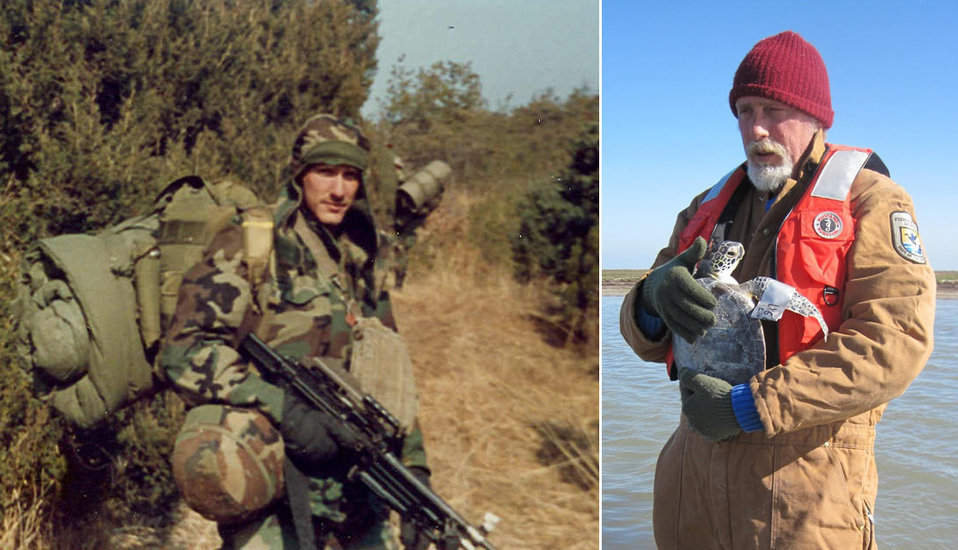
Craig Giggleman-Northeast Region

Craig Giggleman first enlisted in the U.S. Army in 1986. He had just graduated from college and wanted to take advantage of the GI Bill program, knowing that he would eventually return to complete a graduate degree program. Giggleman was no stranger to military life having been raised in a family with a long history of serving thecountry in armed forces.

Giggleman was on active duty in the 25th Division, a light infantry unit specializing in jungle warfare. During his time in the Army he was stationed at the Schofield Barracks in Hawaii and did tours in the Philippines and Korea.

In 1989 Giggleman left the Army and enrolled in the National Guard. In 1994 he completed his full obligation and was honorably discharged from the Army. With a Master’s degree in ecotoxicology Giggleman began working for the U.S. Fish and Wildlife Service in Ecological Service Offices in Texas. In 2012 he transferred to the Virginia Field Office in Gloucester, Virginia, where he now works as a fish and wildlife biologist.

Giggleman says his military background and training prepared him extremely well for conducting emergency response operations.

His son is continuing the family tradition of serving our country, having just enrolled in the U.S. Army just over a month ago.